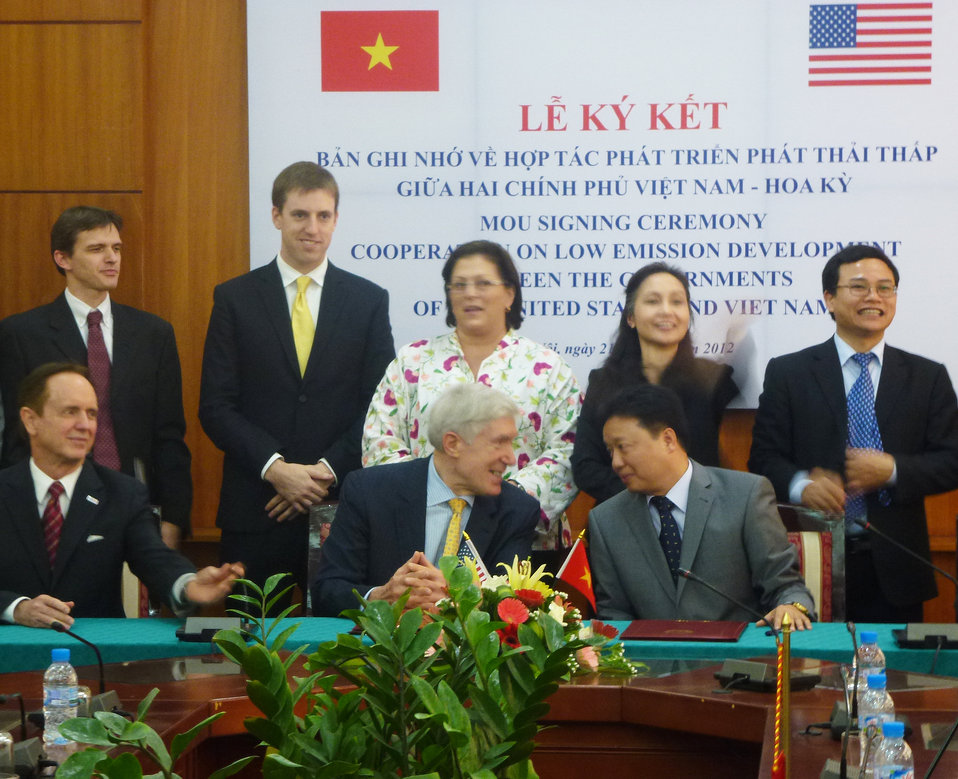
U.S.-Vietnam MOU on Low Emissions Development Strategies Signing Ceremony